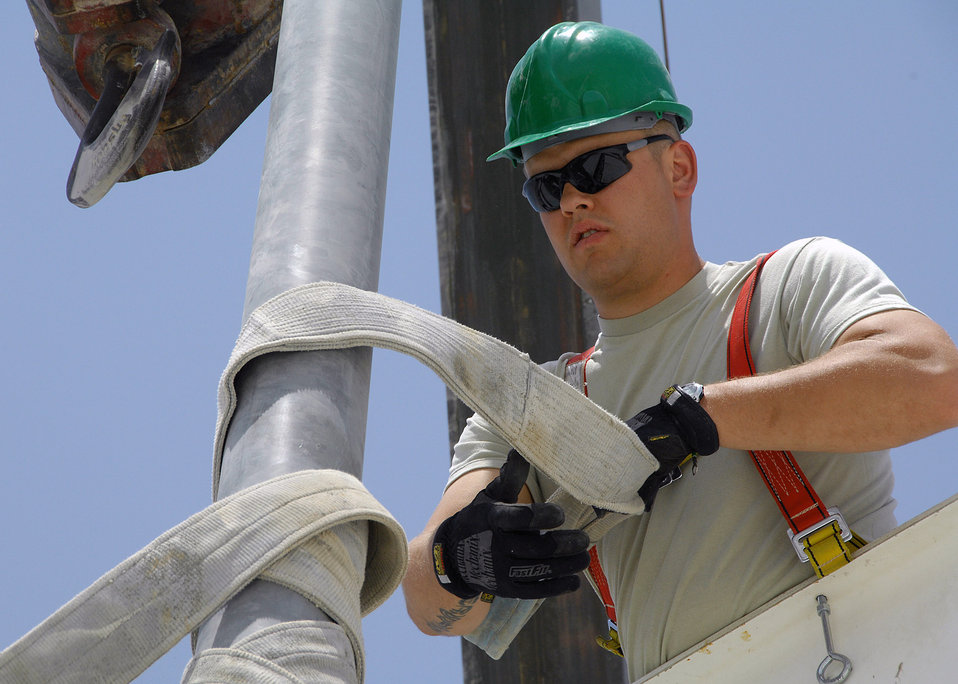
Keeping the lights on

Senior Airman Blake Kelsey removes a harness strap from a light pole Aug. 23 at an air base in Southwest Asia. He is assigned to the 386th Expeditionary Civil Engineer Squadron, and deployed from the Utah Air National Guard.